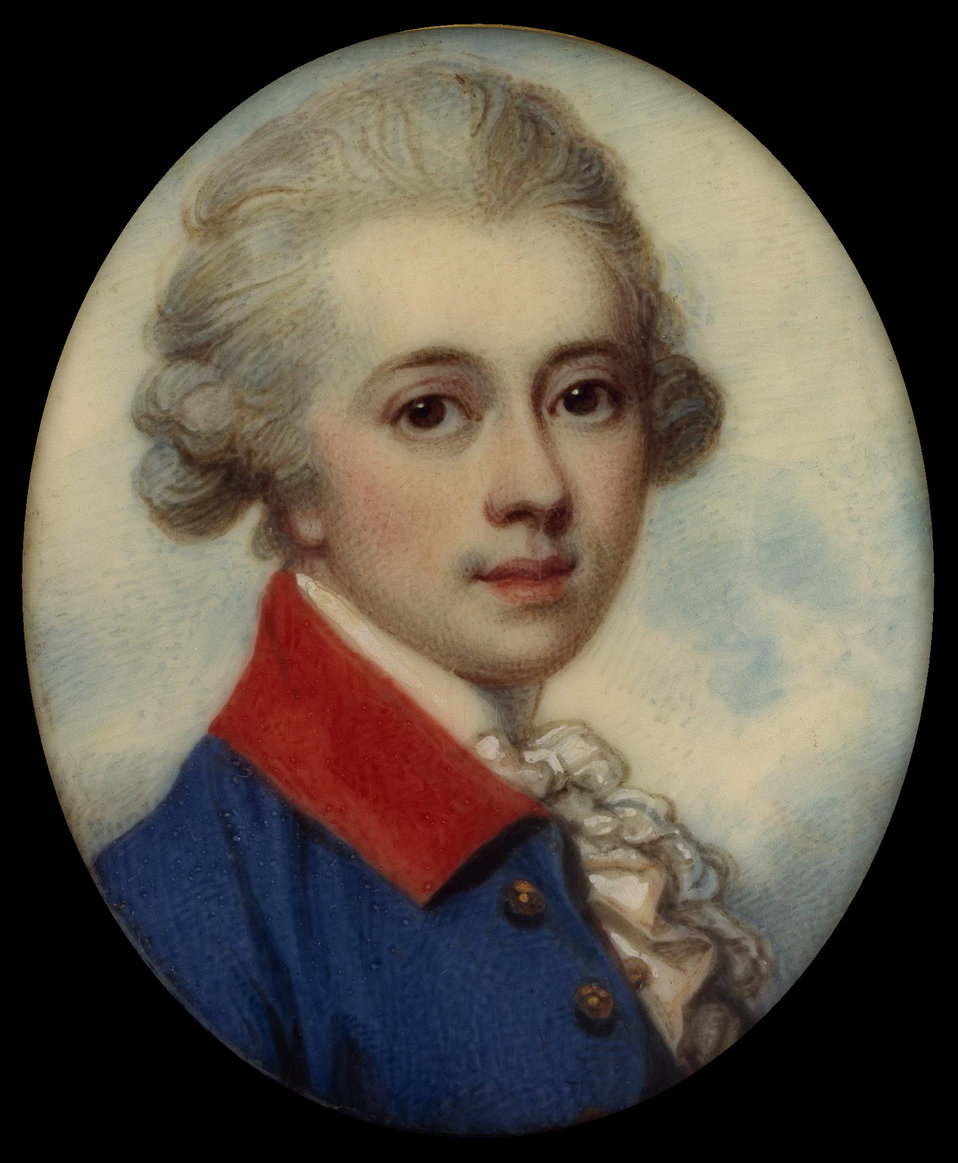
A Young Gentleman by Richard Cosway, RA